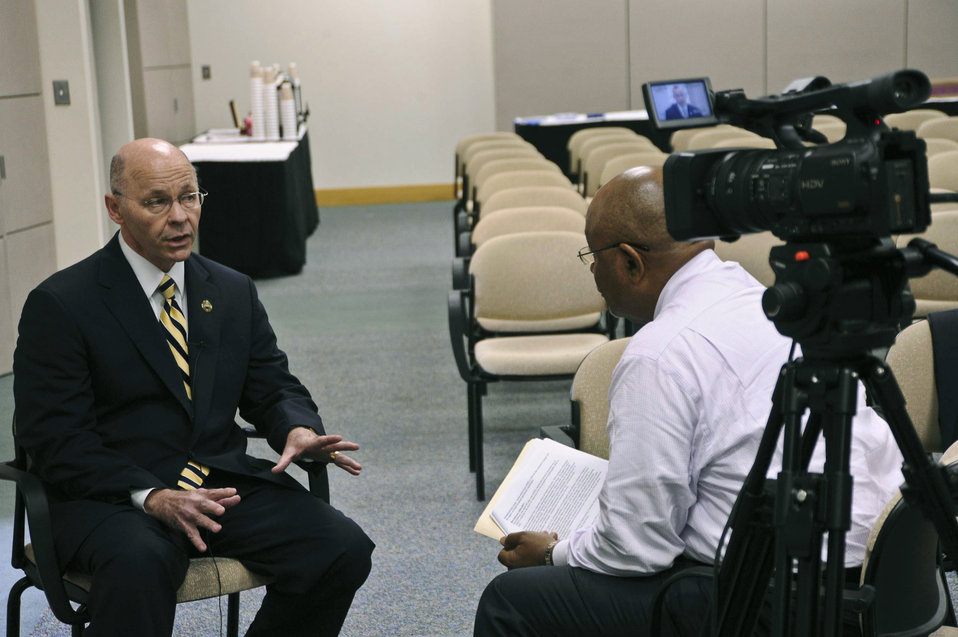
Former U.S. Department of Agriculture (USDA) Animal and Plant Health Inspection Service (APHIS) Administrator Ron DeHaven (2004-2007) is interviewed as part of the APHIS 40th Anniversary celebration activities on May 16, 2012.